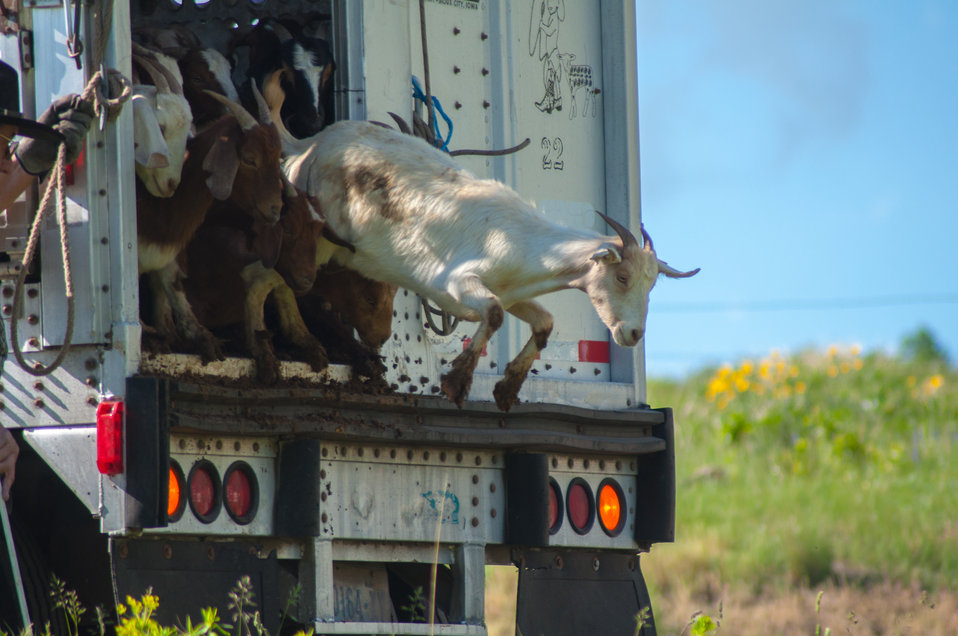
Goat landing on Bozeman Fish Technology Center

On June 8 at 5:00 p.m., 409 yearling domestic goats were off-loaded on the Bozeman Fish Technology Center (BFTC) campus. Thus begins a 3-4 year project of monitored targeted grazing and applications of friendly insects to control noxious weeds and manage brush overgrowth on property of the U.S. Fish and Wildlife Service BFTC.

Purposes of this effort are to reduce the presence of undesirable vegetation, promote restoration of native plants, and assist with fire protection by reducing burnable plant biomass.

The cooperative venture involves the U.S. Fish and Wildlife Service, Montana Outdoor Science School, Friends of the Bozeman Fish Technology Center, Gallatin Valley Land Trust, U.S. Forest Service, and Prescriptive Livestock Services. Integrated Weed Control is supplying the insects as an in-kind contribution to the project, and has applied insects on the BFTC’s 'hot spots' in previous years.